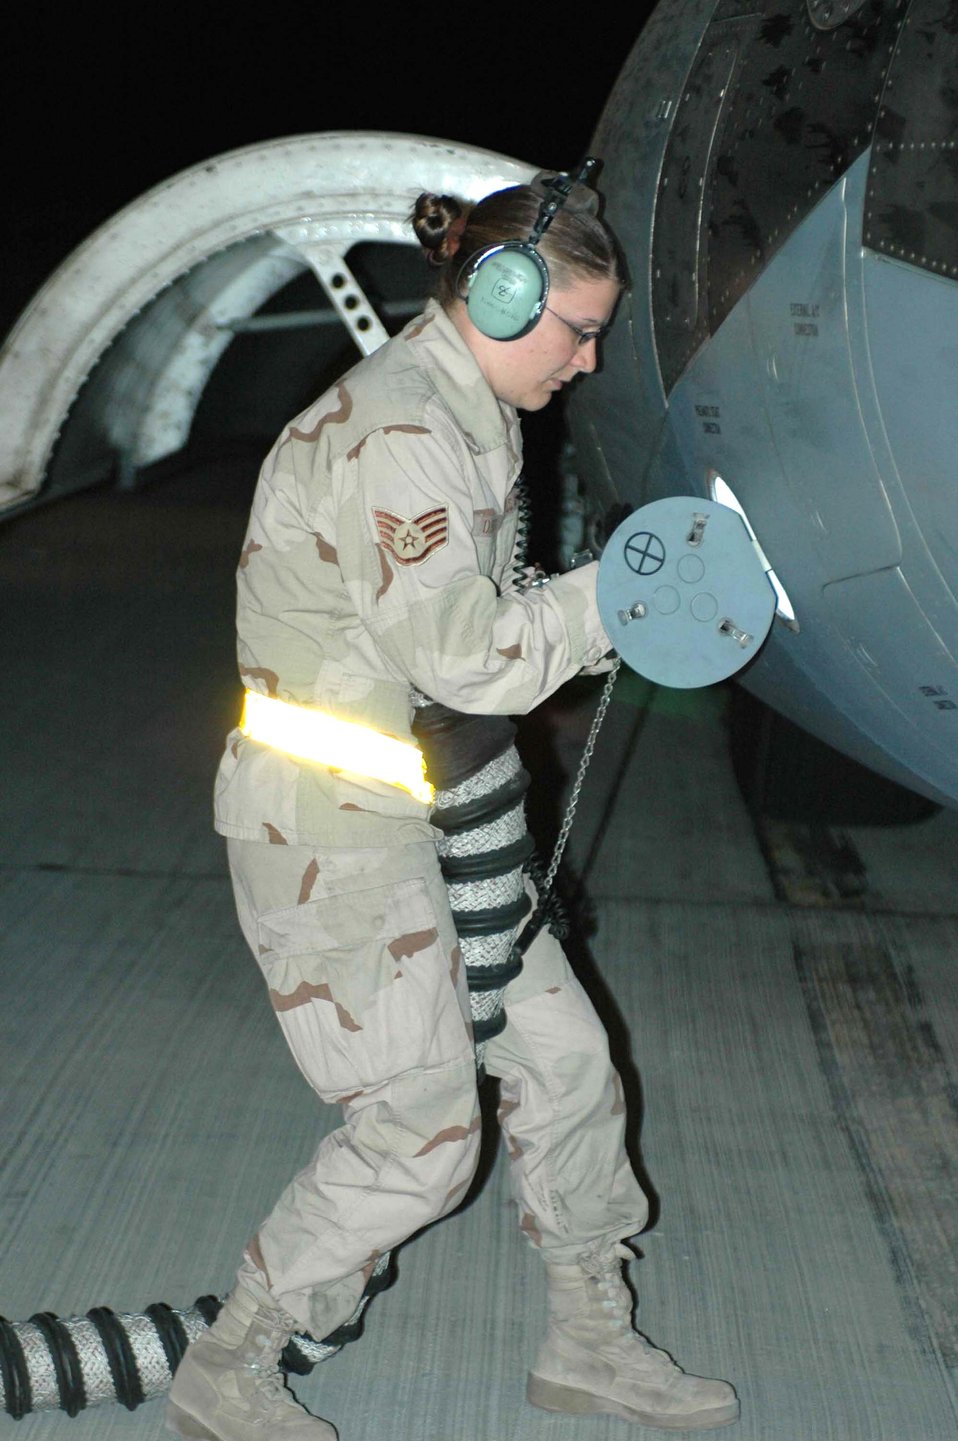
Global missions all in a day's work

Staff Sgt. Katherine Danks prepares a C-17 Globemaster III for its post-flight inspections and maintenance. Sergeant Danks is a C-17 maintainer deployed from the 62nd Aircraft Maintenance Squadron at McChord Air Force Base, Wash.